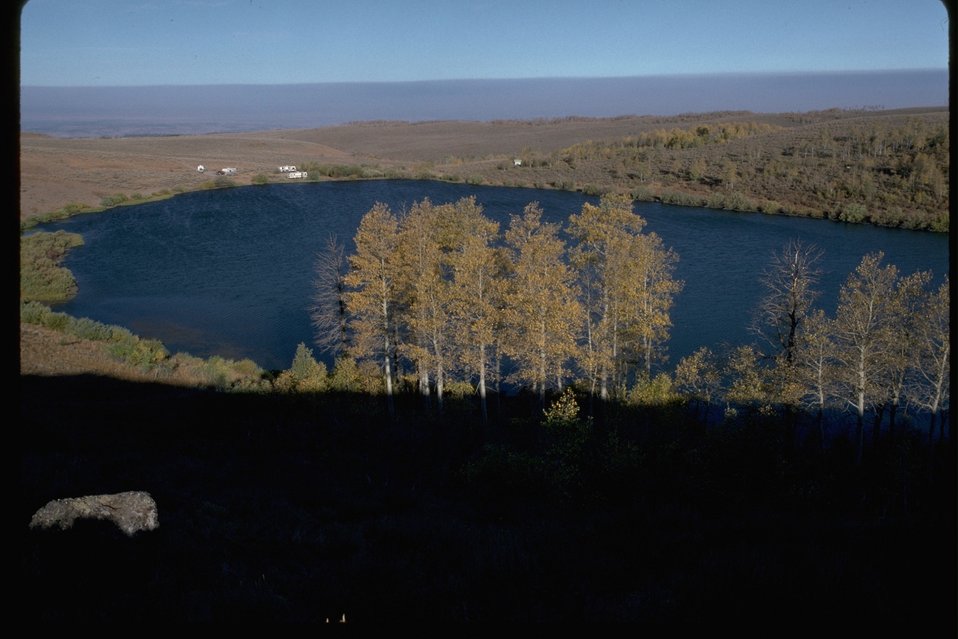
Fish Lake from the southeast looking northwest.